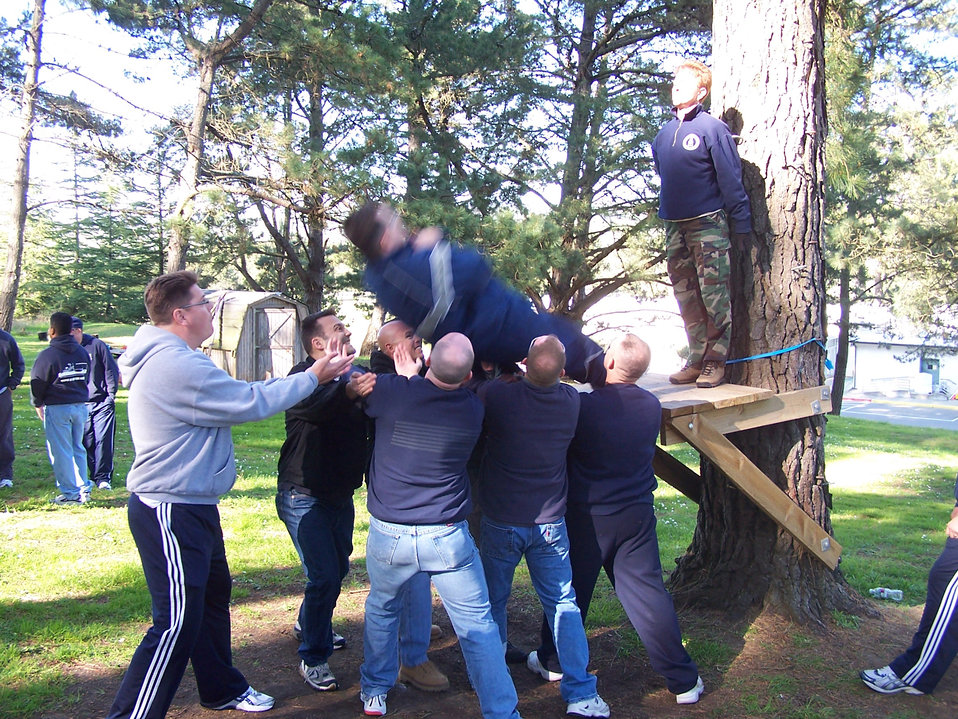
Airmen sail into Coast Guard Academy

Master Sgt. Christopher King trust falls into the arms of Coast Guardsmen during a trust-building exercise at the Coast Guard Academy. Sergeants King and Chance Glascock had the opportunity to attend the U.S. Coast Guard Chief Petty Officer Academy in Petaluma, Calif.